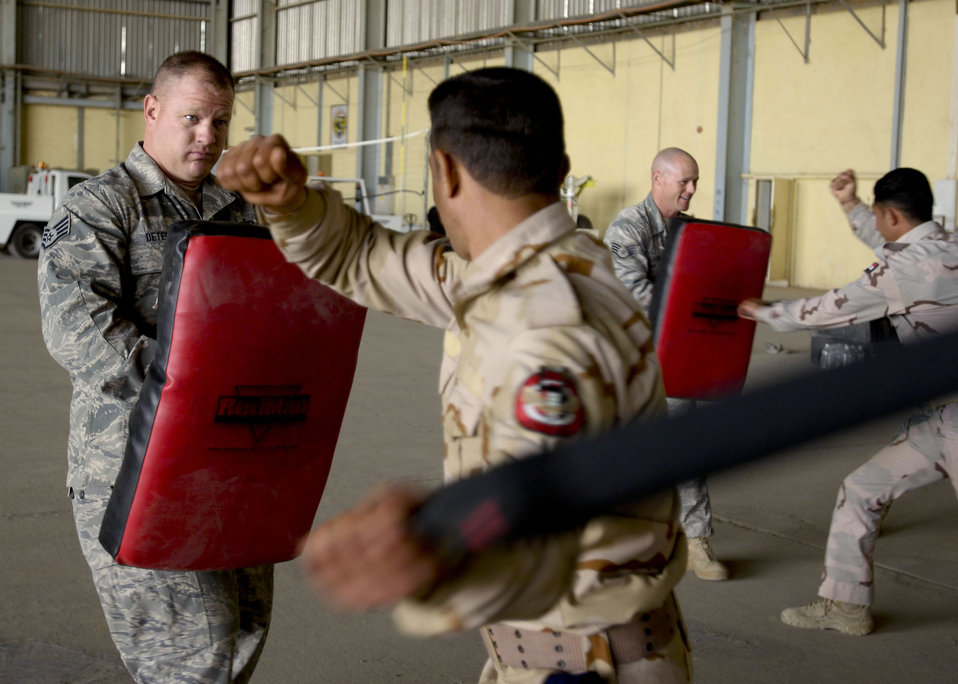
Security forces advisers provide advanced training for Iraqi airmen

Staff Sgt. Timothy DeTerra defends himself from a baton attack by an Iraqi air force airmen Dec. 23, 2010, during a training session. This training is the first of its kind held at New Al-Muthana Air Base, Iraq, and promises to help the Iraqi air force build a reliable and secure force in the year ahead. Sergeant DeTerra is a New Al-Muthana Air Base Transition Team member.